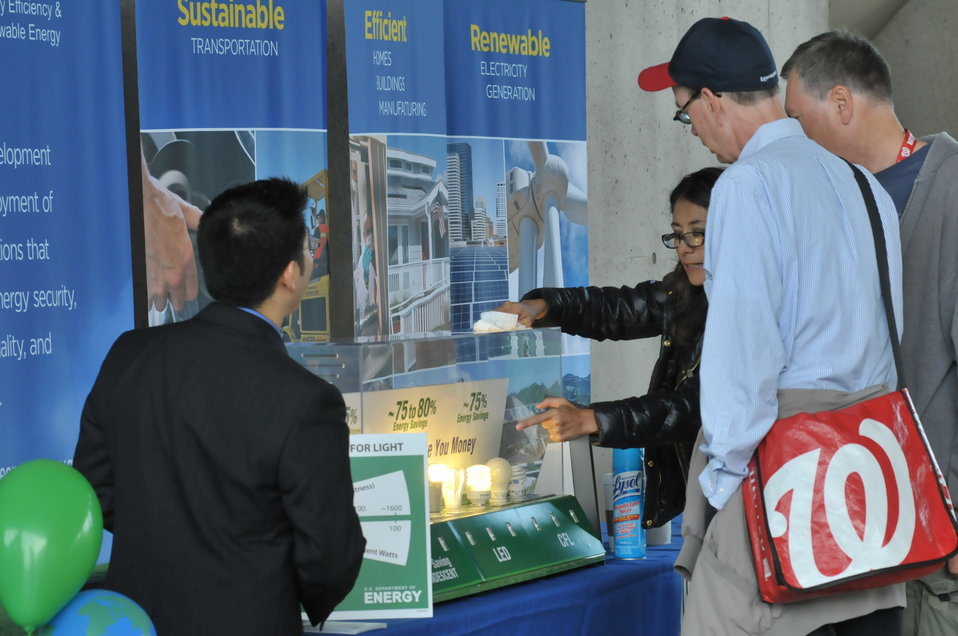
U.S Postal Services introduces a new Global: Sea Surface temperatures forever stamp at the Earth Day program at Department of Energy on April 22, 2014.